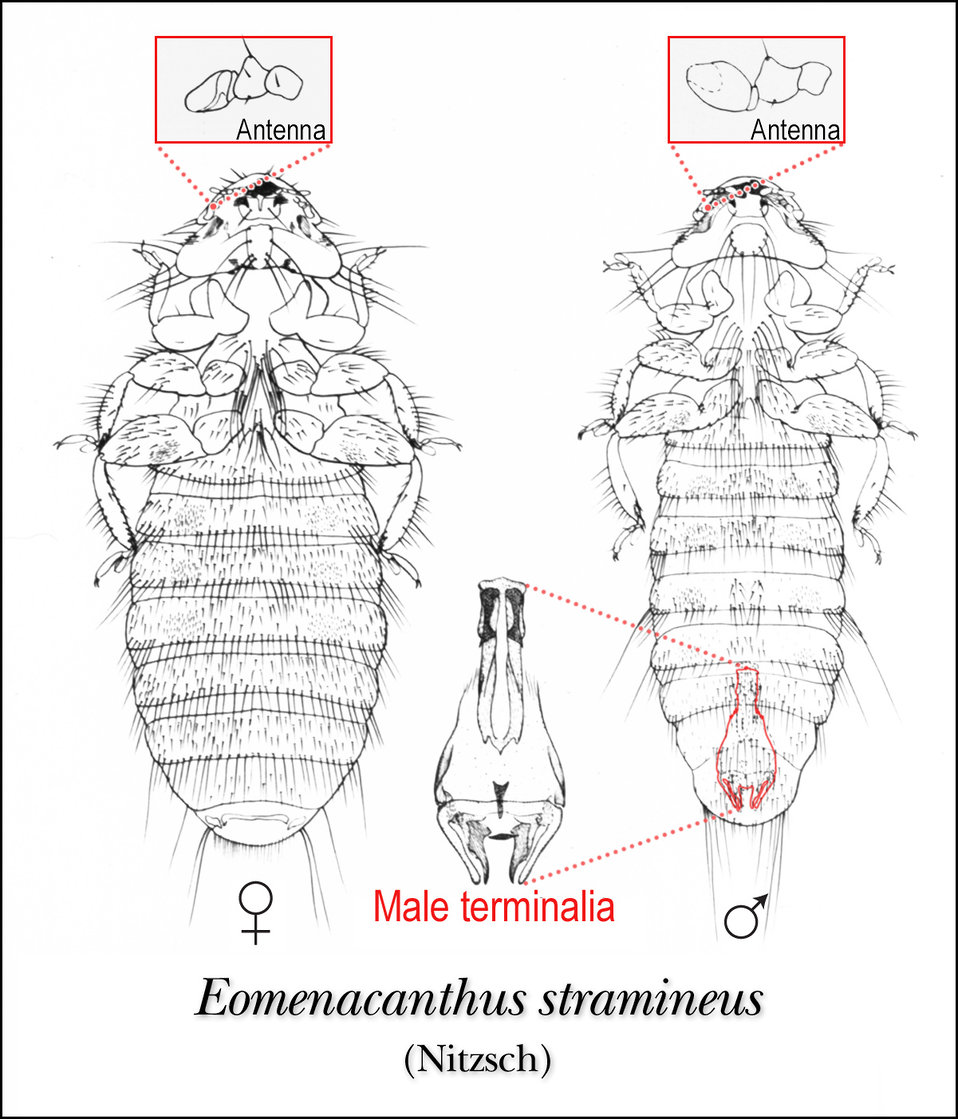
This illustration of female and male 'chicken louse', Eomenacanthus stramineus, reveals the insect's ventral surface.